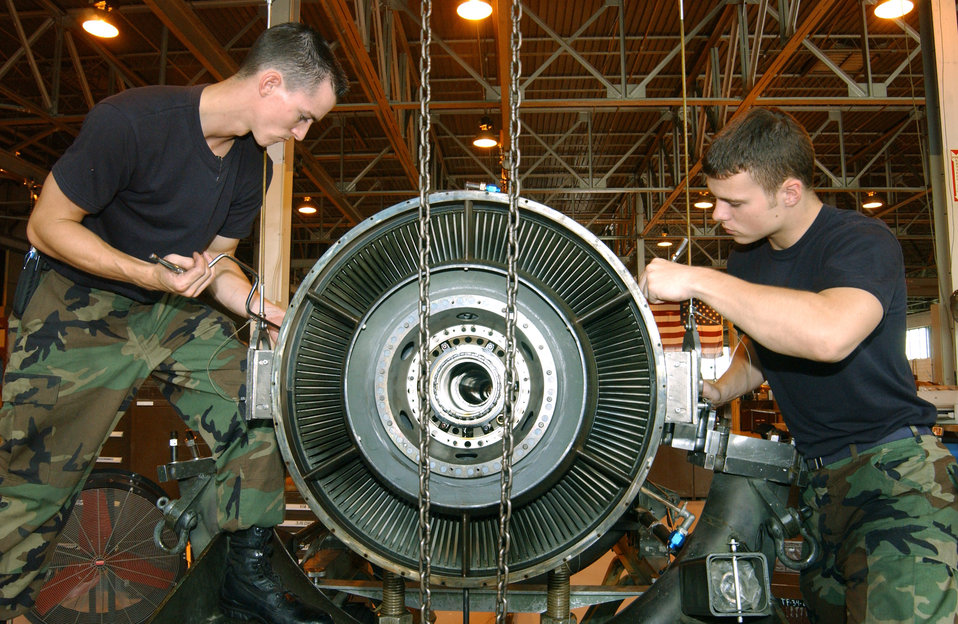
Getting the job done

SHAW AIR FORCE BASE, S.C. -- Airmen 1st Class Justin Kenefick (right) and Aaron Shuff works together to remove a low-pressure turbine from a TF34 engine here Aug. 31. Both Airmen are aerospace propulsion journeymen assigned to the 20th Maintenance Group.